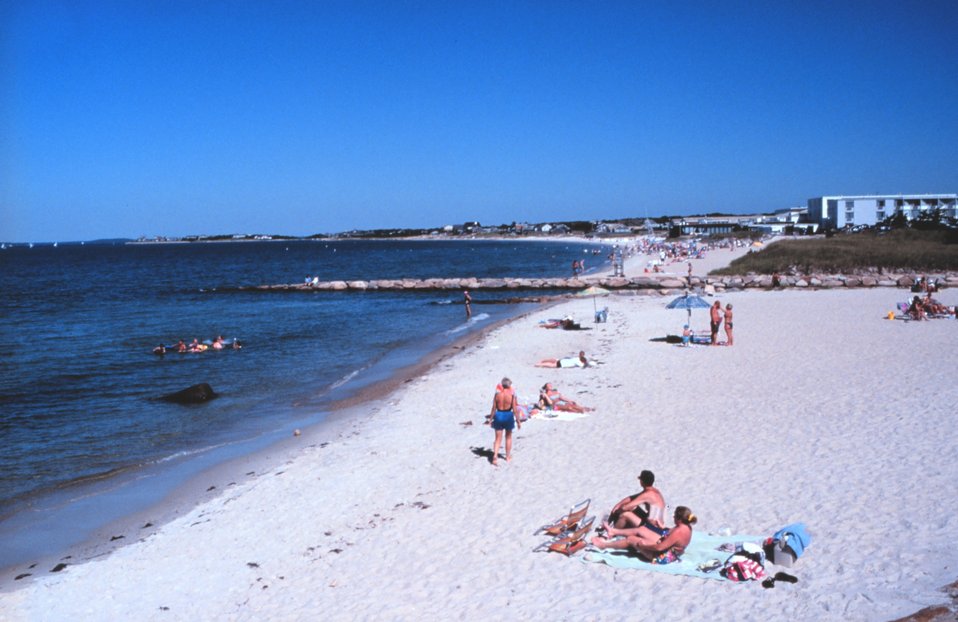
Old Silver Beach, West Falmouth